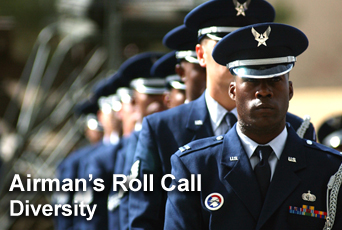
Airman's Roll Call: Diversity

This week's Airman's Roll Call focuses on the differences between diversity and equal opportunity.